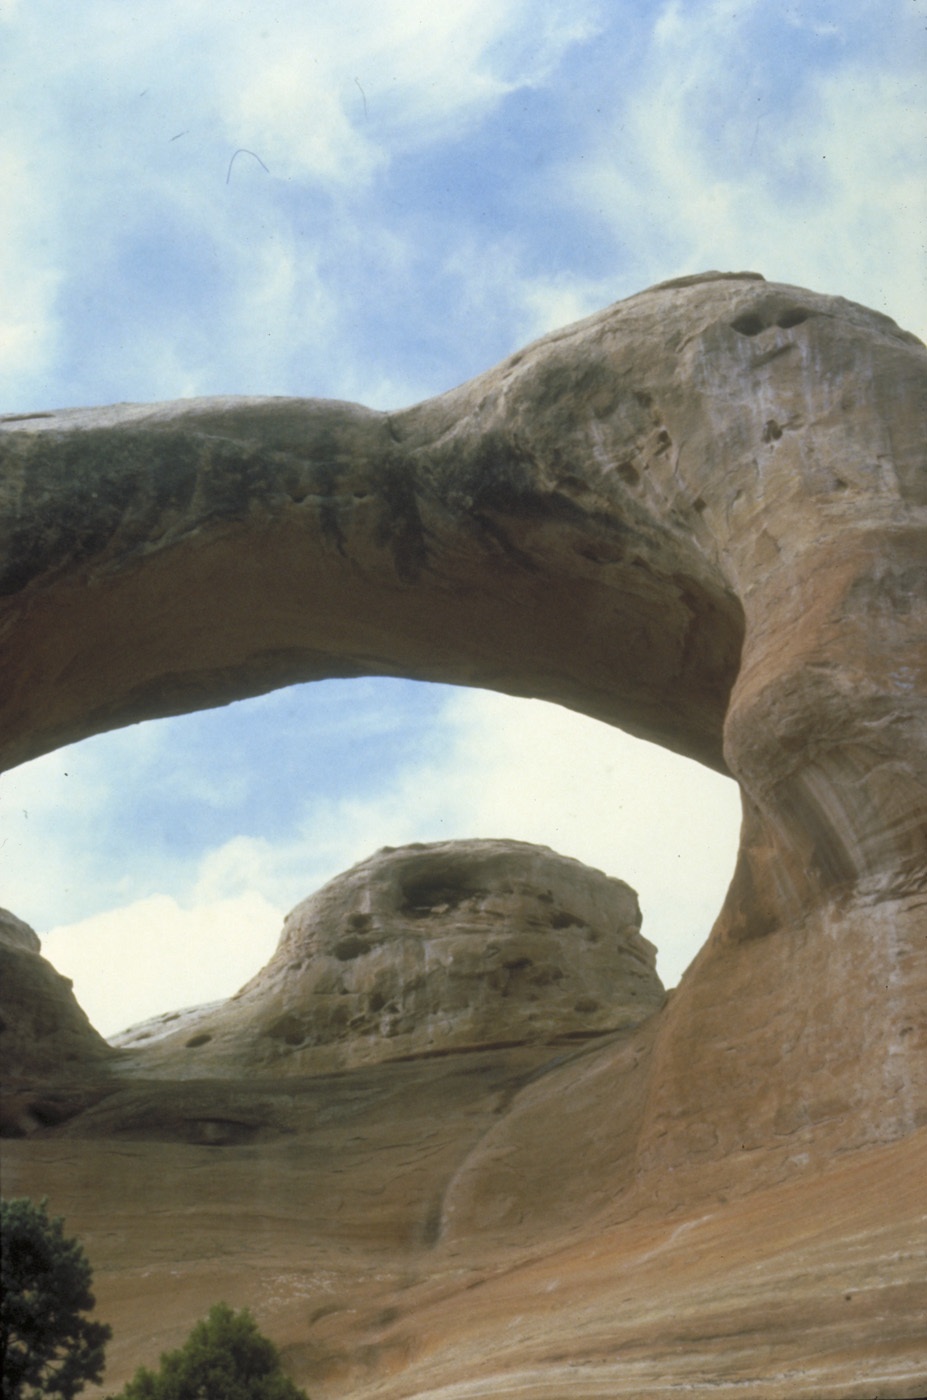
Cedar Tree Arch in Rattlesnake Canyon